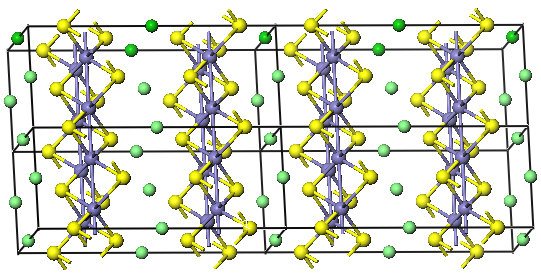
Iron-Based Superconductors

NIST research shows that magnetism plays a key role in iron pnictide superconductors' crystal structure. (Iron is purple; arsenic is yellow; calcium is green.) Only if the iron's magnetism is taken into account do calculations of the distance between these crystal layers match up with lab measurements. Magnetism's importance to their physical properties make it a likely factor in the iron pnictides' ability to superconduct, say team members.